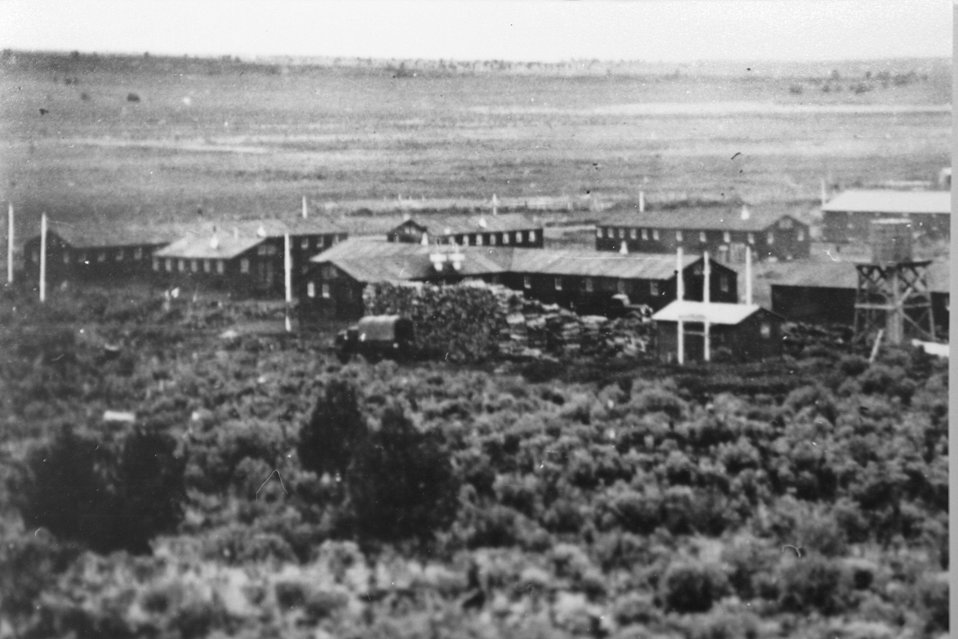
Gap Ranch "CCC" Camp. This camp constracted roads, fences, structues at the northern Great Basin Experimenal range west of Riley (Formerly Squaw Butte Expr. Station). and other rahge improvements for the U>S> Grazing Service between 1938 and 1942. Courtesy, Joe Urbancek